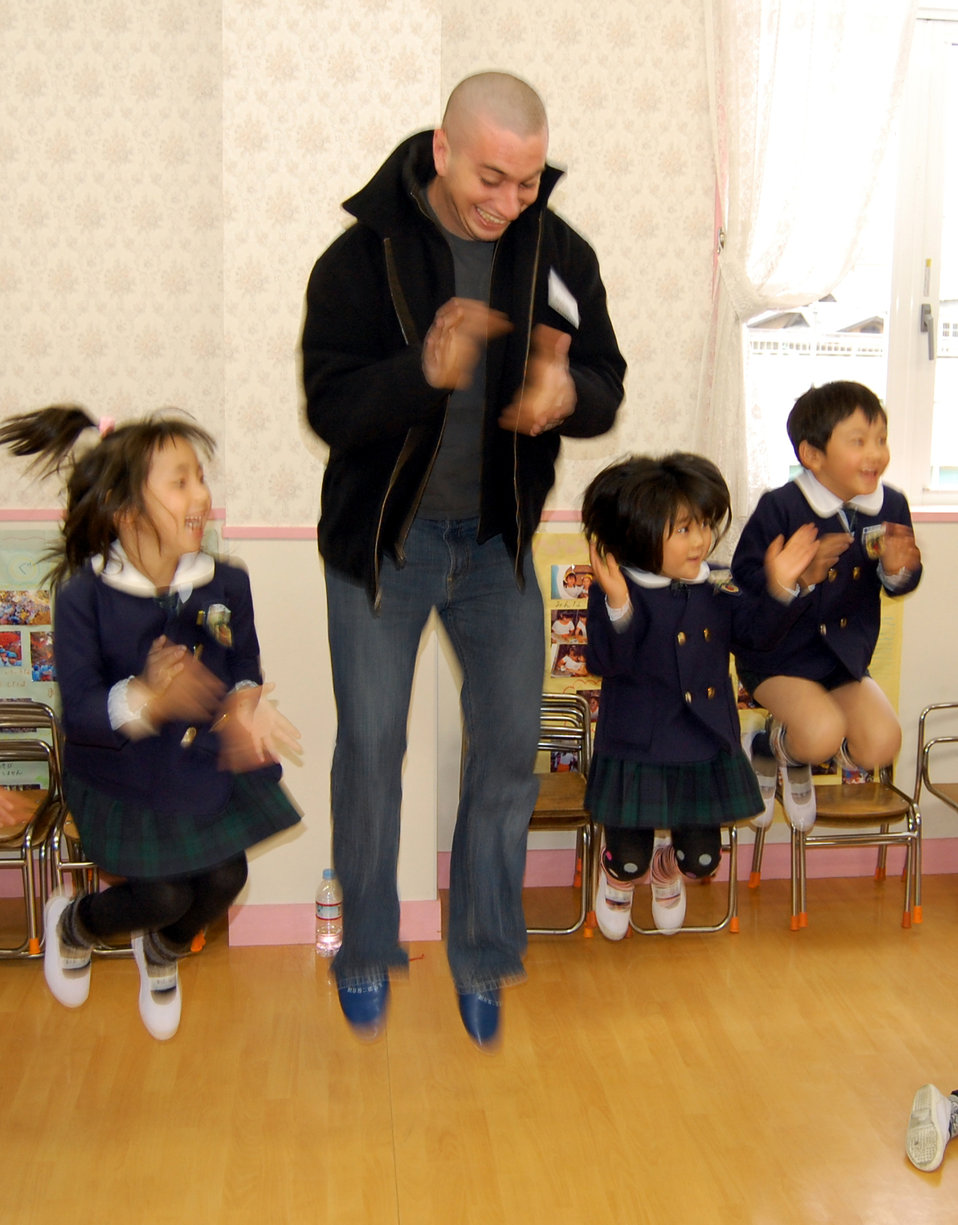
Kadena Airmen visit school children during training

Airman 1st Class Andrew Augustine participates in a Japanese children's song while visiting Runbini Kindergarten Feb. 1, 2010, near Hyakuri Air Base, Japan. A dozen Airmen from Kadena Air Base, Japan, visited the school while operating from the Japanese air base. Airman Augustine is assigned to the 67th Aircraft Maintenance Unit.